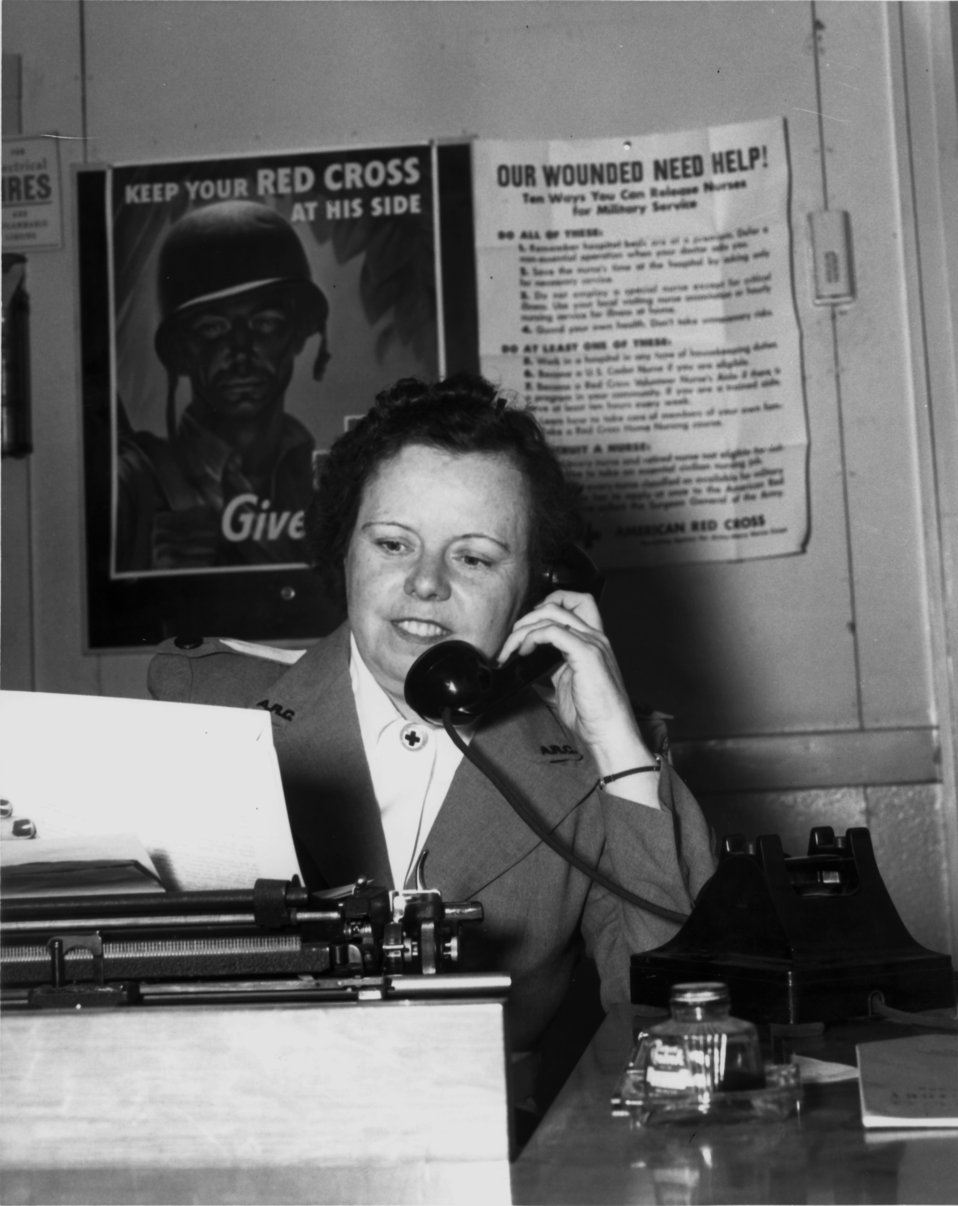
Red Cross Representative 'Keep your Red Cross at his Side' Oak Ridge

pro 351-1 DOE photo Ed Westcott 3/9/45
Oak Ridge Tennessee